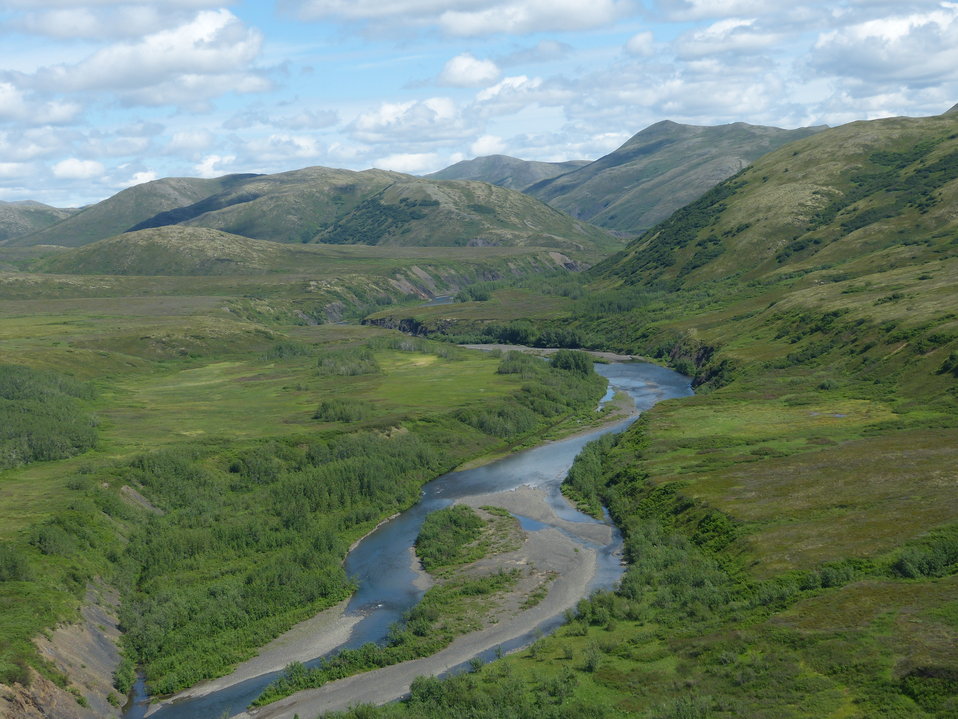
Quicksilver Creek, Kilbuck Mountains, Yukon Delta National Wildlife Refuge

Photo by: Kristine Sowl,
USFWS, Yukon Delta NWR, July 10, 2013